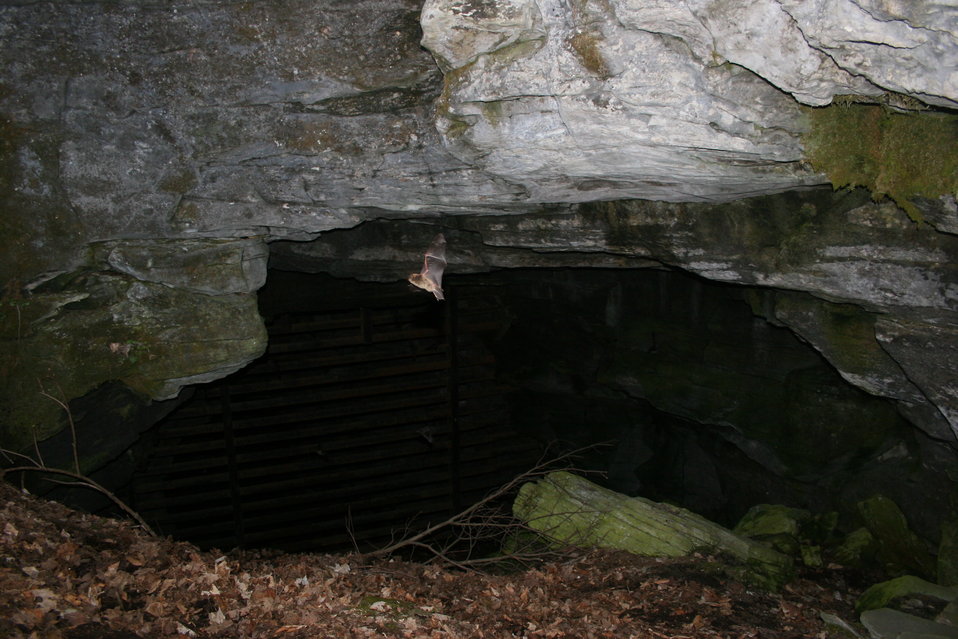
Bat flying at entrance of cave

A bat flying at the entrance of Mt. Aelous Cave in Vermont